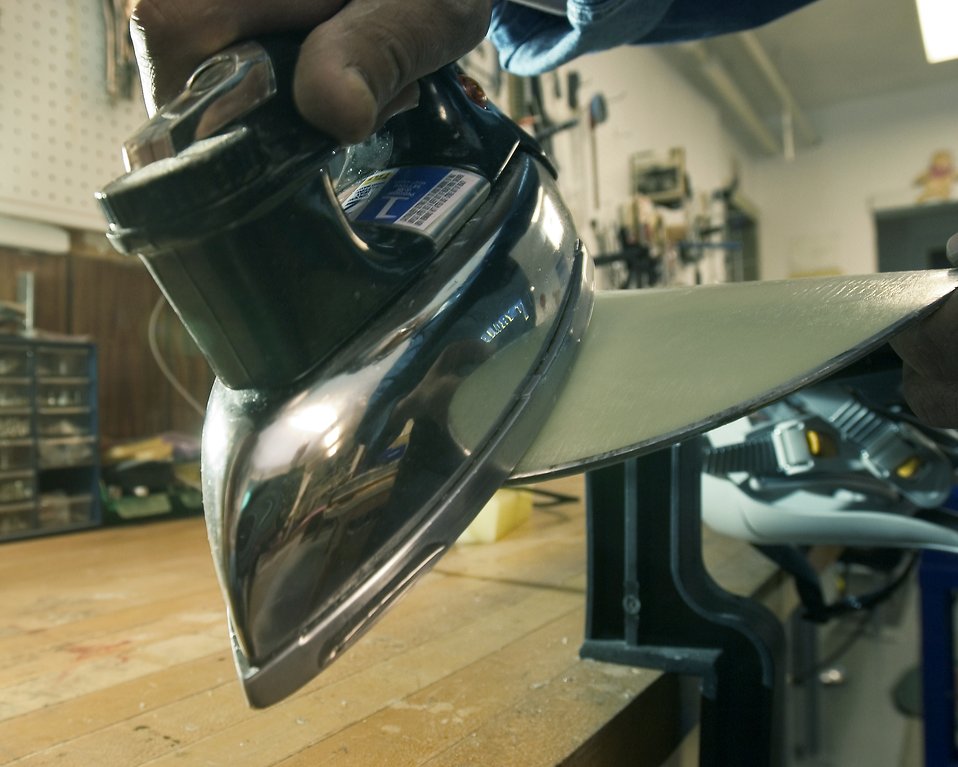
Mountain Home 'maintainer' readies skis for season

MOUNTAIN HOME AIR FORCE BASE, Idaho -- Raul Hernandez uses an iron to apply wax to the bottom of snowboards and skis. He cares for more than 600 pairs of skis, 100 snowboards and countless cross-country skis, snowshoes and sleds.